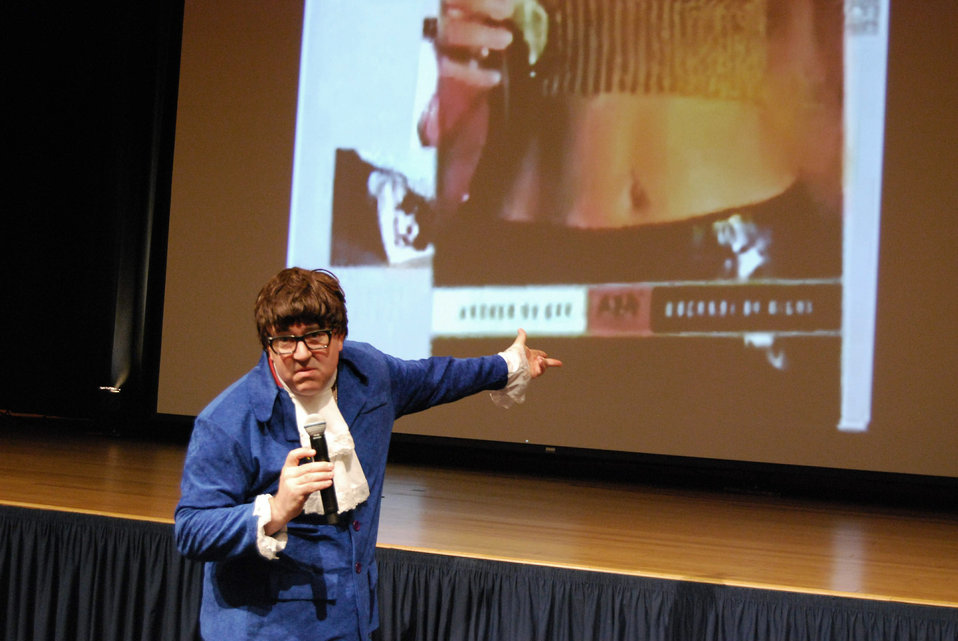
'Voices of Men' gives unique insight on sexual assault

Sexual assault awareness activist Ben Atherton-Zeman impersonates Austin Powers in his one-man show